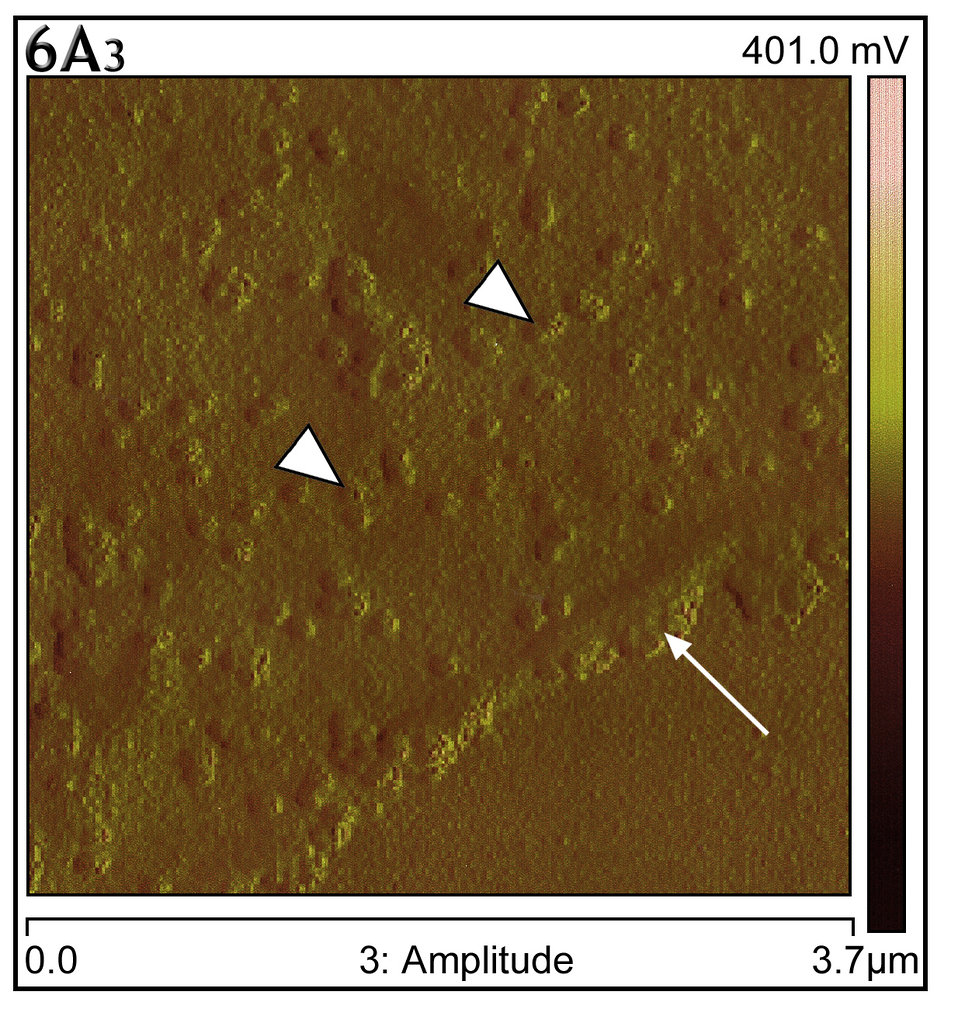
This atomic force micrograph of SARS infected Vero E6 culture cells revealed virus extrusion at the thickened plasma membrane.